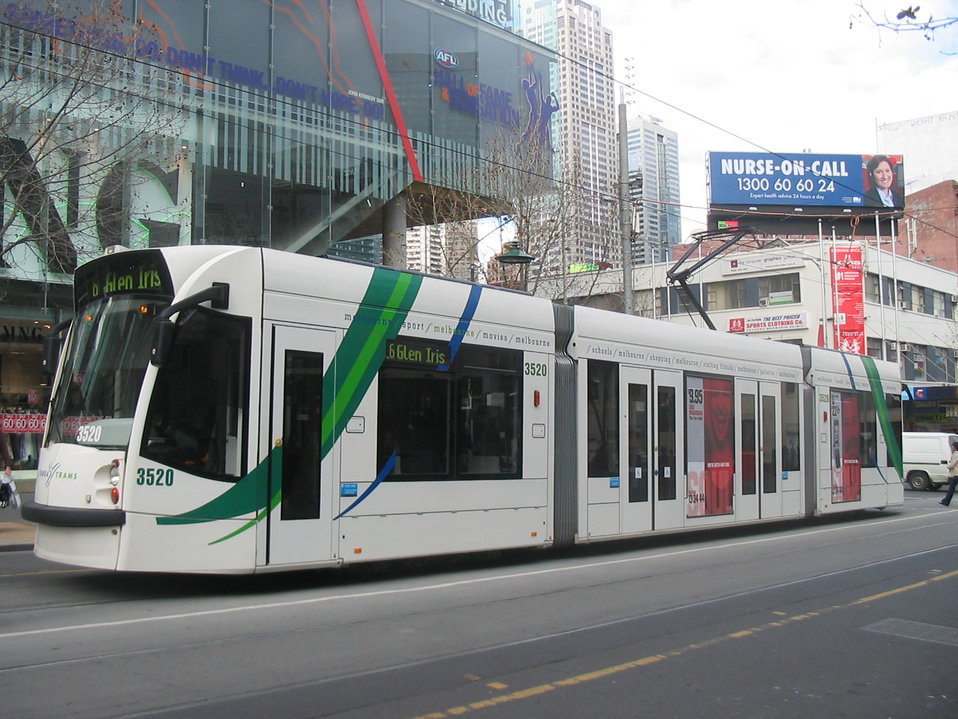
D1.3520 on route 6 at Swanston Street. Picture taken by myself.